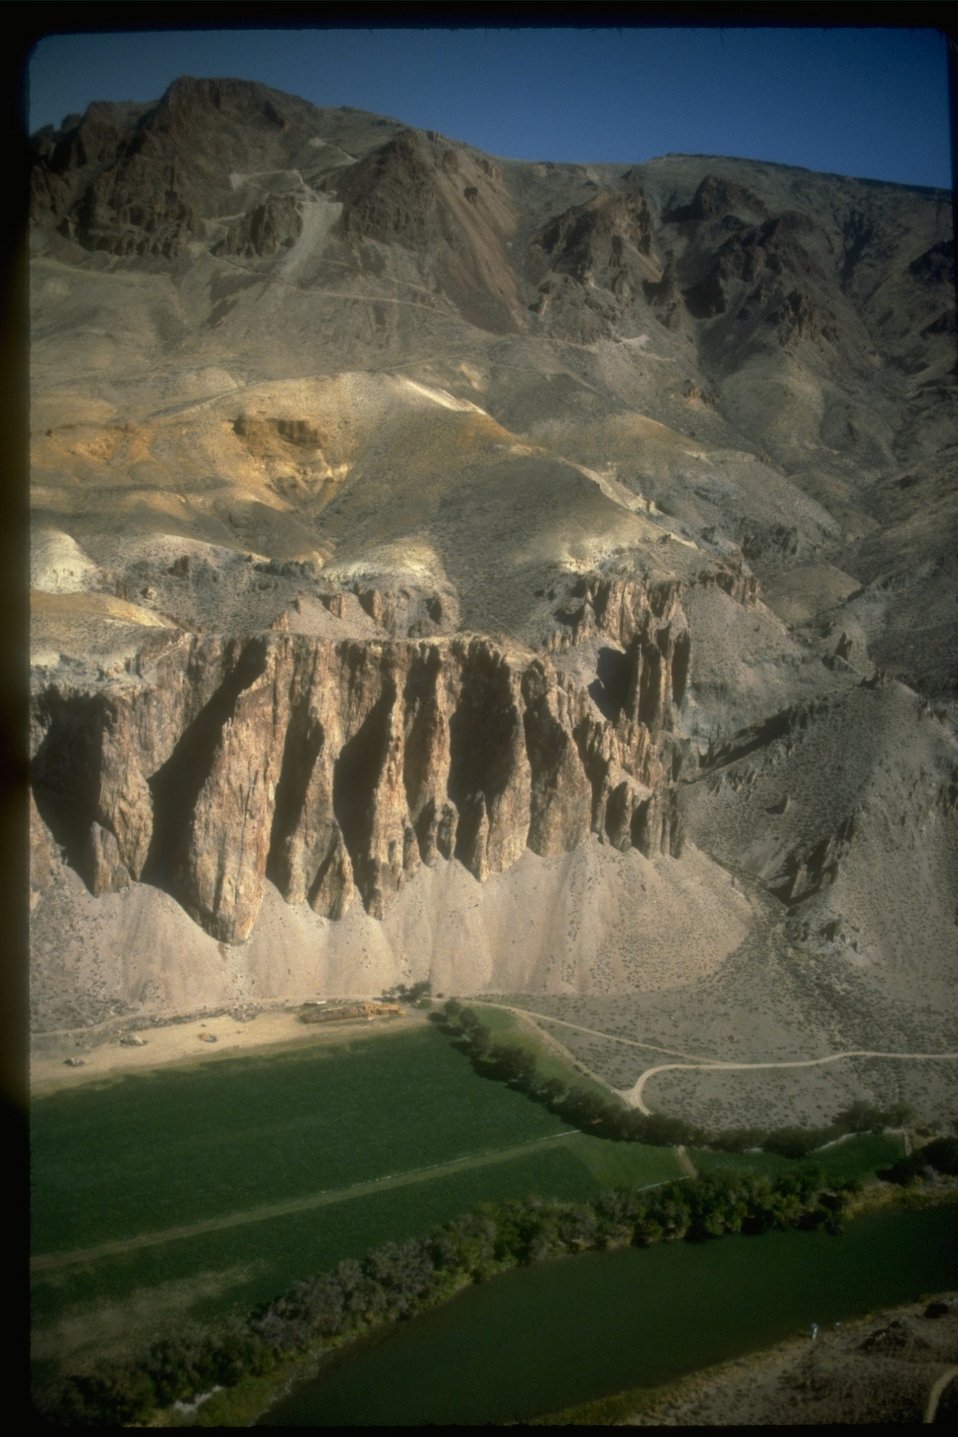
Arial view of the Birch Creek Historical Ranch